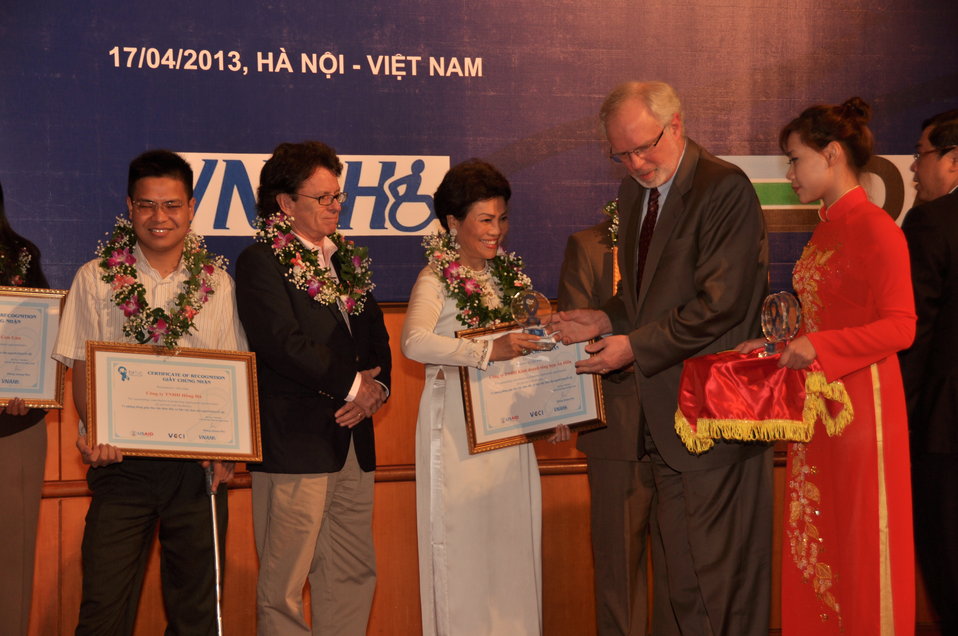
USAID Mission Director Joakim Parker awards employees with disabilities

Hanoi, April 17, 2013